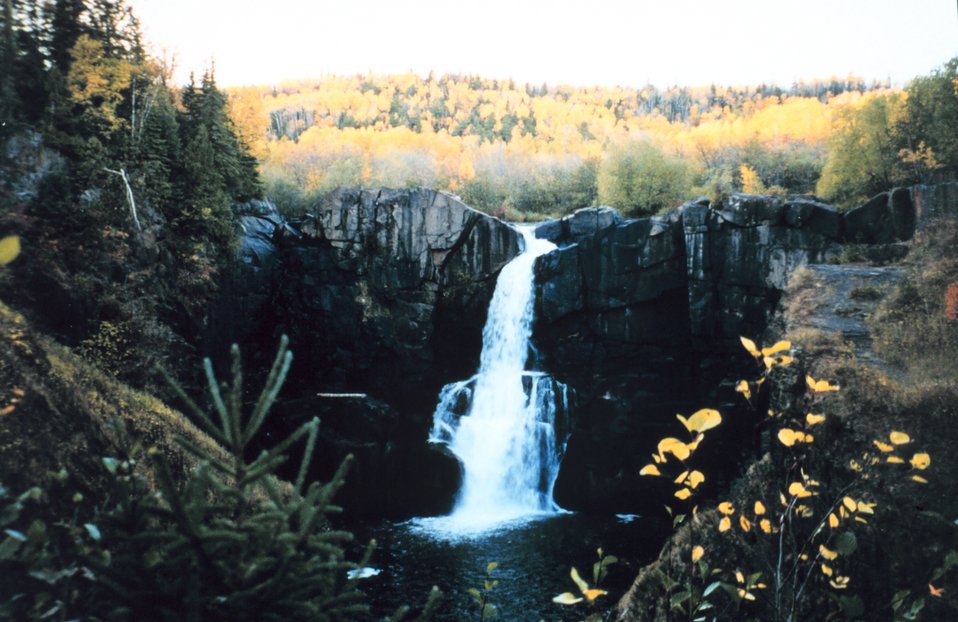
Small waterfall in Grand Portage National Monument